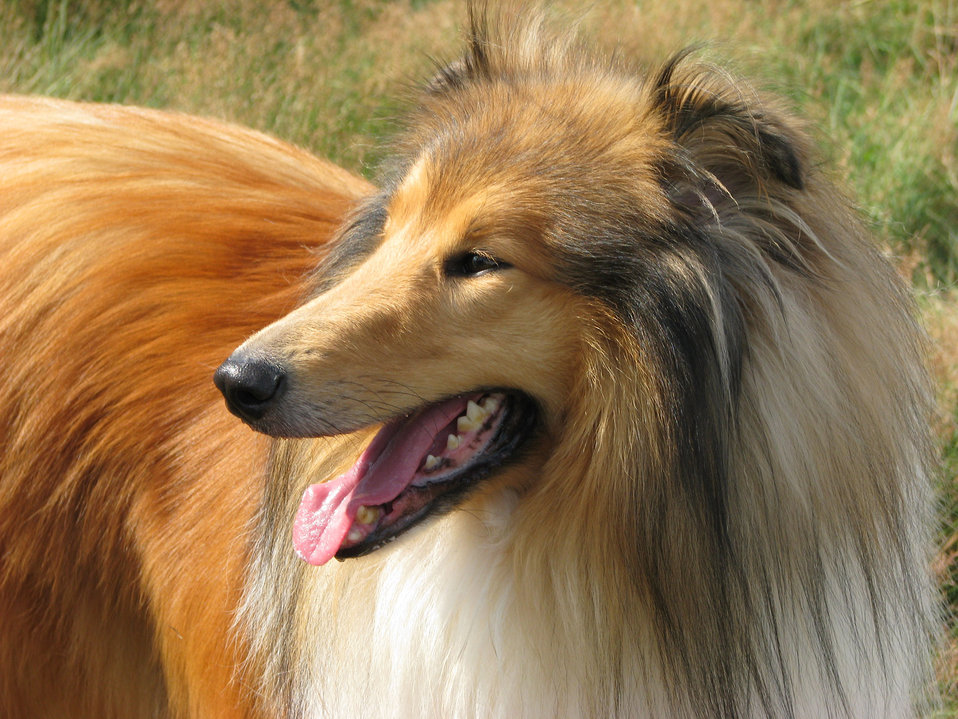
Rough collie dog

Close-up of a rough collie dog in profile.